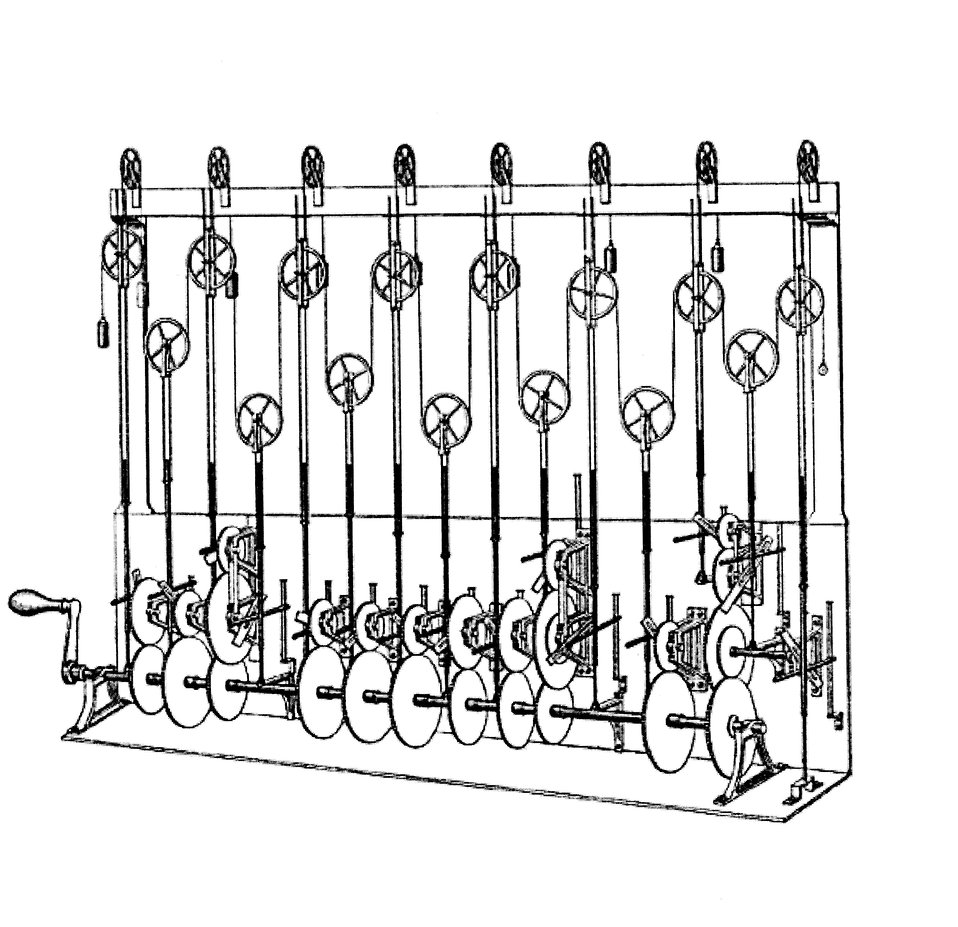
Scan made by uploader from copy of Thomson's design sketch for the third tide-predicting machine, 1879-81, as published in Proceedings of the Institution of Civil Engineers, vol.65, 1881 --- too old to be in copyright.